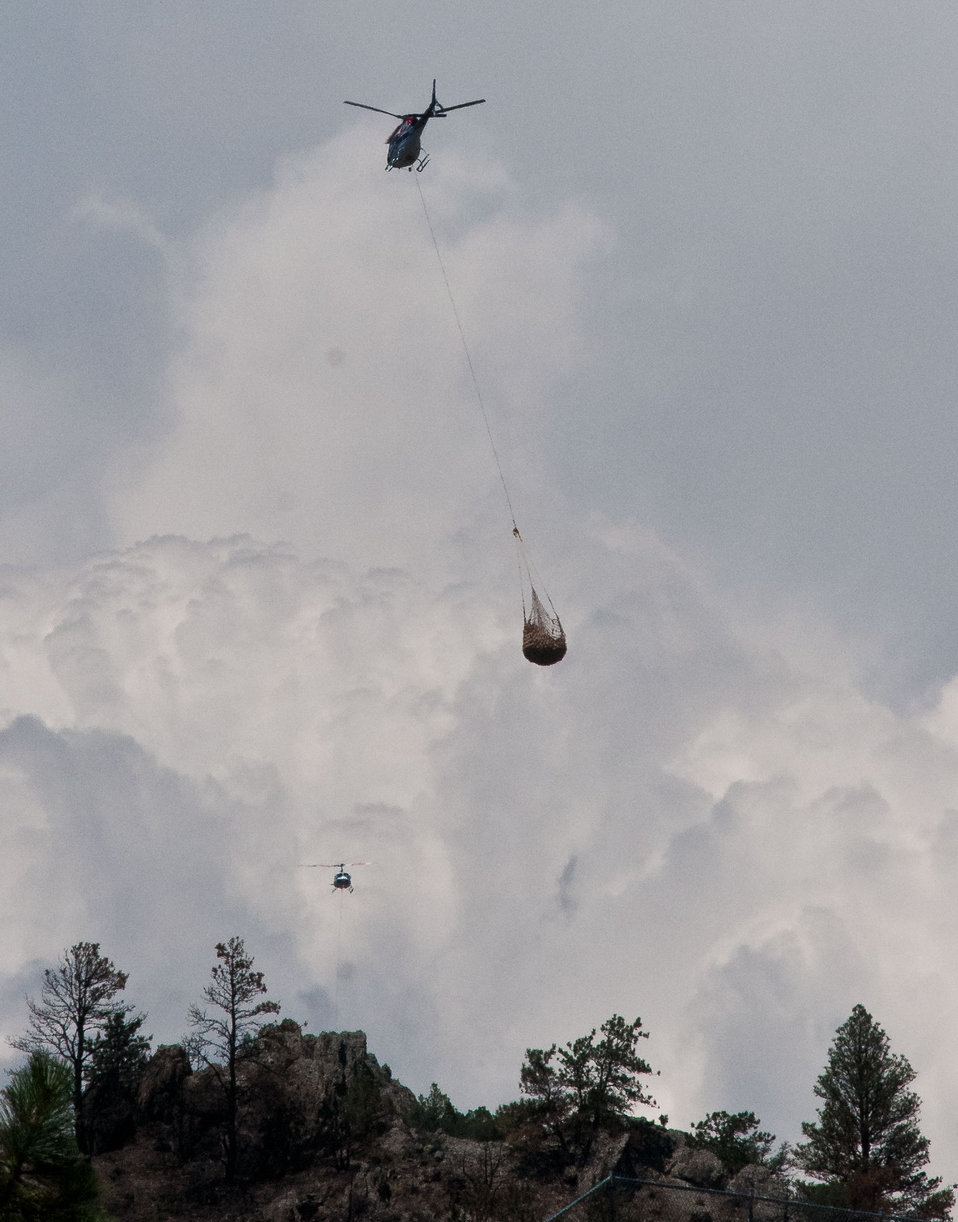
Helicopters come and go in the continuing aerial application of straw to mitigate soil and ash runoff from the mountainous terrain leading to Seaman Reservoir, drinking water resource for the City of Greeley, on Friday, July 20, 2012, near Fort Collins, Colorado. A Bell UH-1H (2-blade rotor) and A-Star Model B (3-blade rotor) take turns picking up loads of straw from the landing zone at the foot of the reservoir spillway. The 100-150- cables hold and release loads of certified straw weighing 1,400 – 2,000 pounds. Forest service lands received straw, while private and other lands receive a seed mix and straw to promote ground cover plant growth on ash-covered lands. In total, 1,800 tons of straw will be applied during the 14-day operation. One quarter of the cost was paid by the City of Greeley and the U.S. Department of Agriculture funded the remainder. The Hewlett Gulch Fire was started by a camper’s alcohol stove, on May 14, at the saddle of a picturesque mountain ridge along the Hewlett Gulch Trail of Poudre Canyon, in the Roosevelt National Forest, 60 miles north of Denver. At it’s more than 400 firefighters were battling fires being pushed by 50 mph winds that helped blacken over 12-square-miles of dry ground cover, brush and trees. Many of the trees were already dead and tinder dry from beetle-kill. The water in the reservoir remains clean and clear, while downstream water flow has gone from famous Colorado clear water to nearly black flows of water heavily laden with ash, silt, and burnt debris that recent thunderstorms have already washed down from the mountainsides.